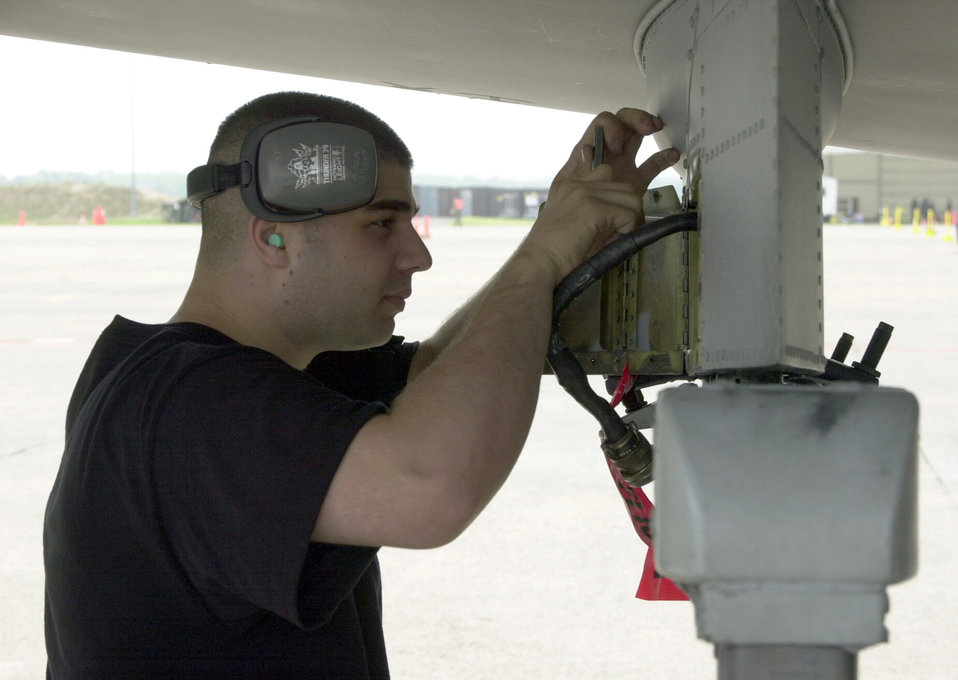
Ready for inspection

BRADLEY AIR NATIONAL GUARD BASE, Conn. -- Airman 1st Class Sam Allard works on a pylon of an A-10 Thunderbolt II during an Operational Readiness Inspection here May 18. Airman Allard is a crew chief with the 103rd Maintenance Squadron. An ORI is a periodic inspection that tests a military unit's ability to deploy people and equipment to a combat area and conduct sustained combat operations on limited notice.